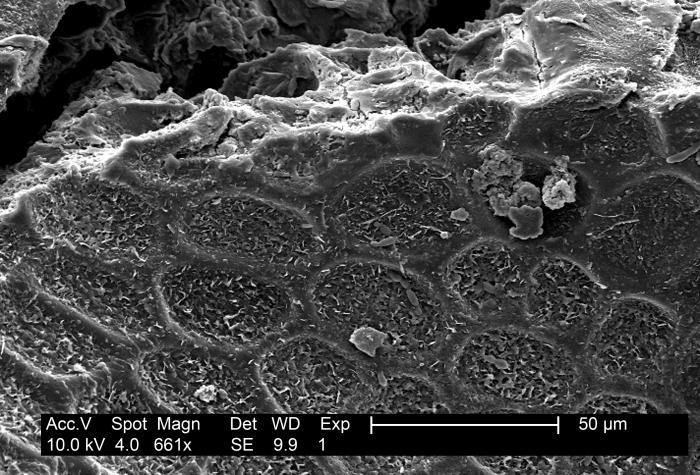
Magnified 661X, this electron micrograph reveals the details of the textured surface found on a honeydew melon, Cucumis melo.Tips for Fresh Produce SafetyBuying Tips: